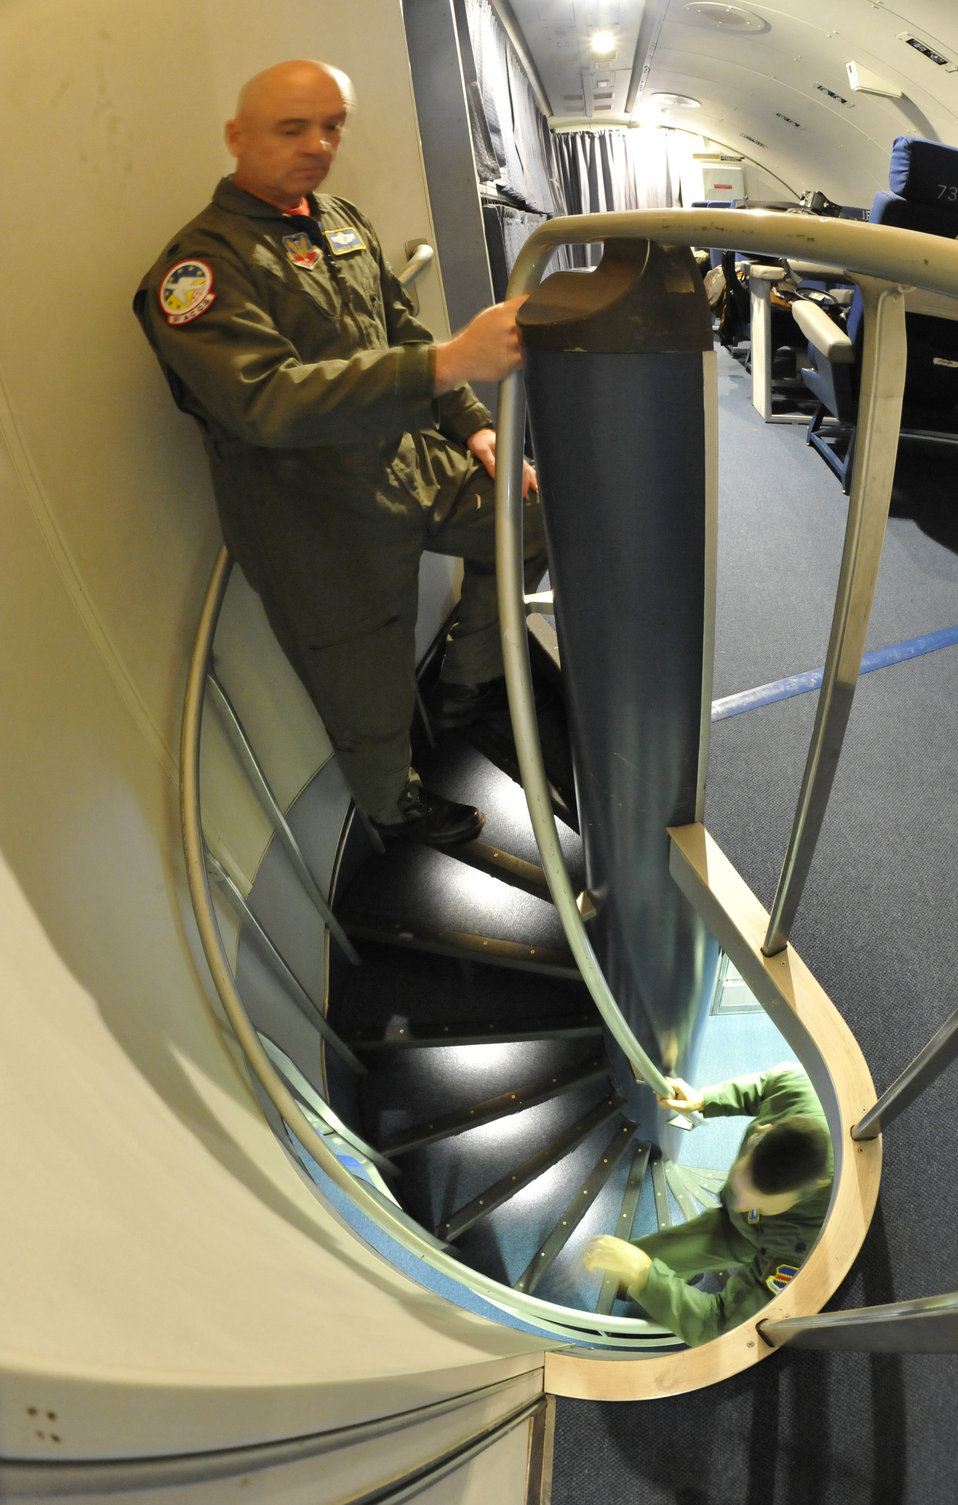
E-4B milestone

Lt. Col. James D'Amour arrives at the flight deck as Lt. Col. Tim Carter makes his way up the stairs of an E-4B at Offutt Air Force Base, Neb. The E-4B serves as the National Airborne Operations Center for the president, secretary of defense and chairman of the Joint Chiefs of Staff. The aircraft passed a significant milestone this month by sitting alert constantly for more than 35 years.